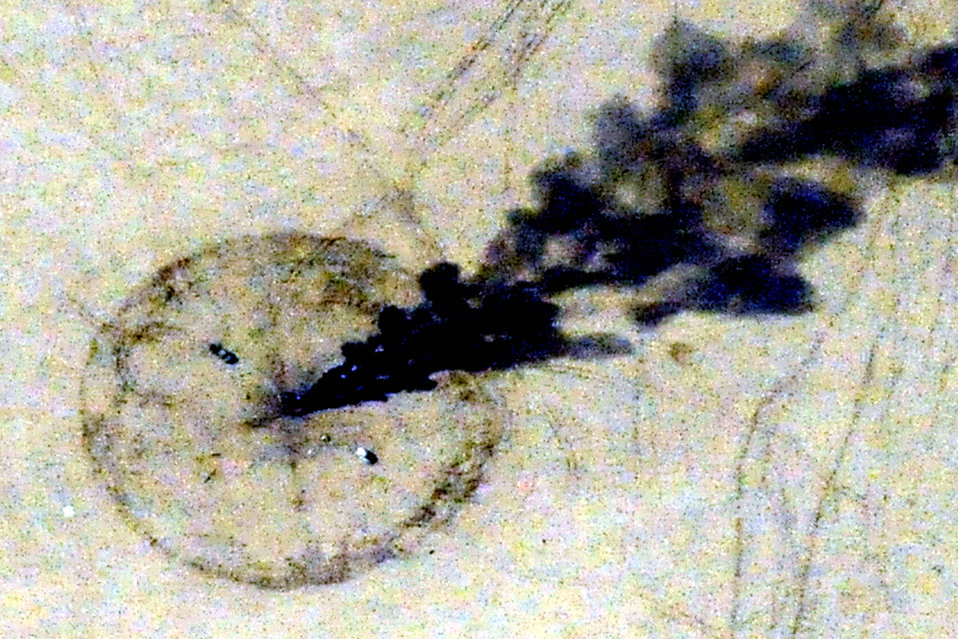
Iraqi airmen demonstrate operational capabilities in Hellfire exercise

A target burns Nov. 8, 2010 on the Aziziyah Range, south of Baghdad, following a direct-hit by an Iraqi air force AC-208 Cessna Caravan aircrew. Iraqi airmen have trained continuously for the Hellfire mission, mastering the weapons load, target attack and airmanship skills necessary to maintain proficiency since completing their first Hellfire launch in 2009, also resulting in a direct hit of a training target. U.S. Air Force air advisers with the 521st Air Expeditionary Advisory Squadron in Kirkuk work shoulder-to-shoulder with Iraqi airmen.